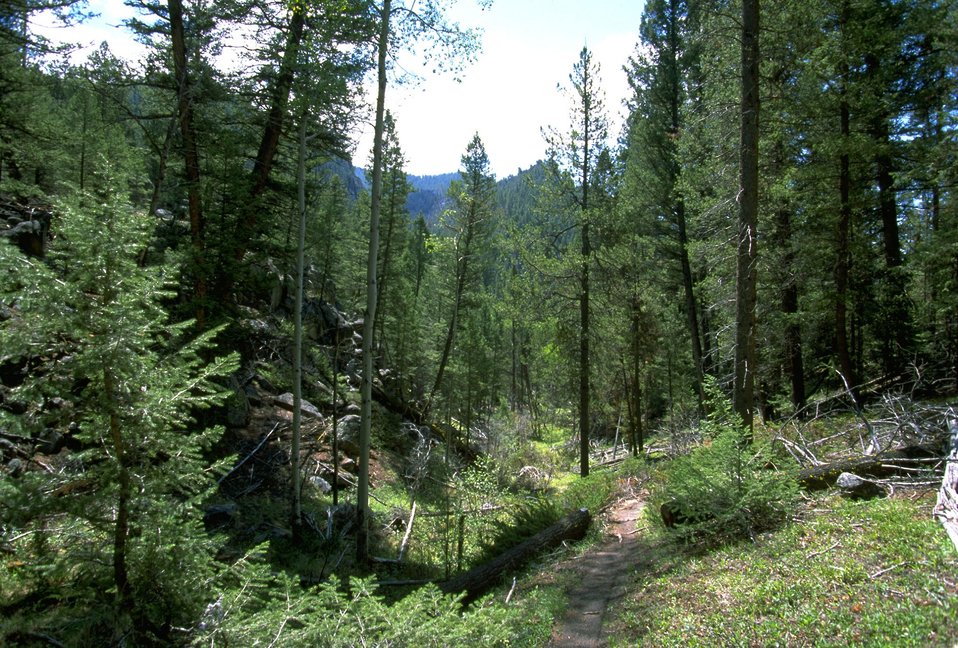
A trail in the wilderness